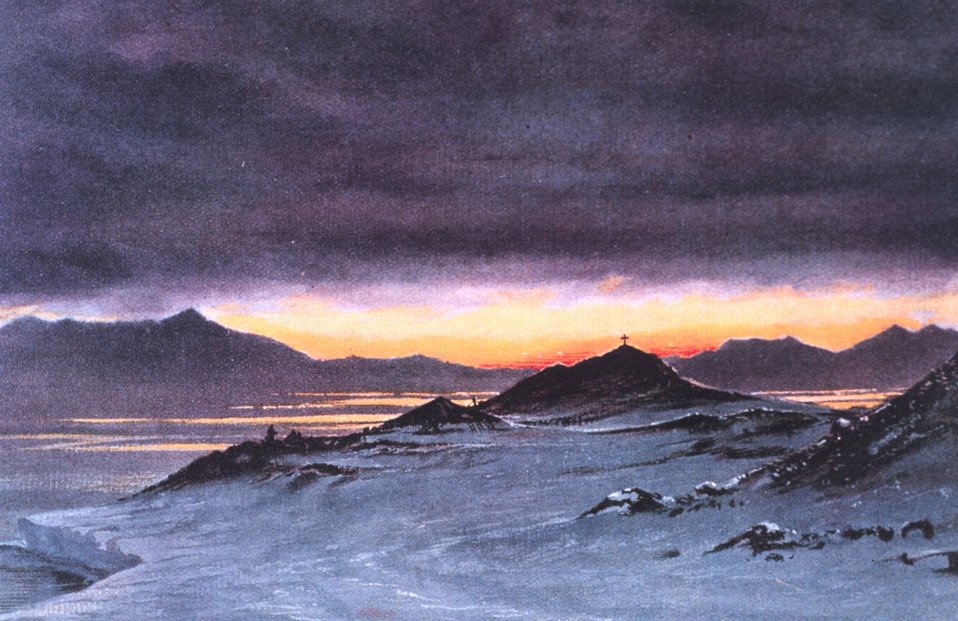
Hut Point, midnight, March 27, 1911. In: 'Scott's Last Expedition', 1913. Dodd, Mead, and Company, New York. P. 138. Vol. I. Library Call Number G850 1910 .S35 1913.